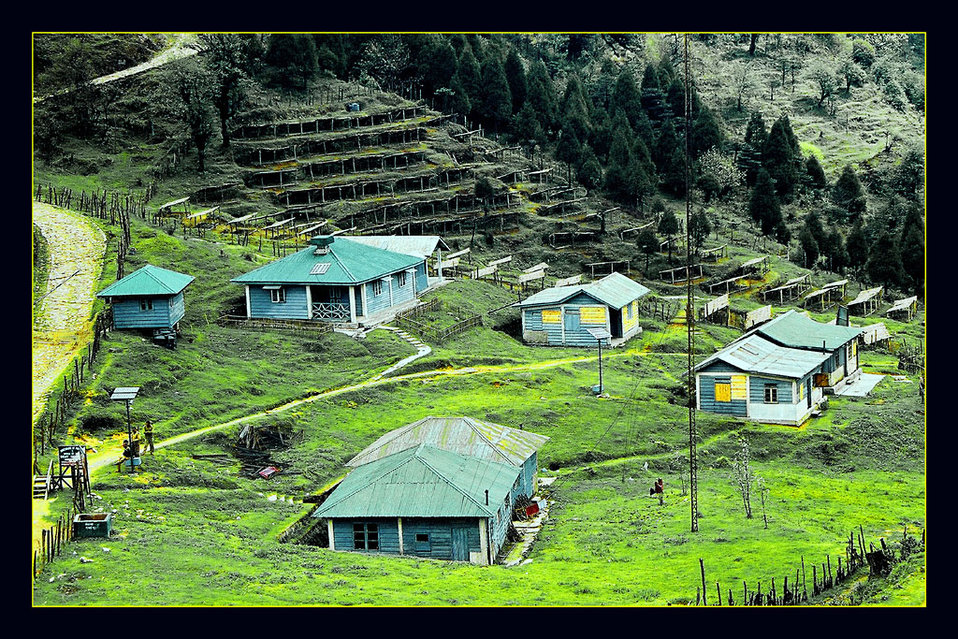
Uploaded by request of Deba Prasad Roy

Taken in Darjeeling District in the State of West Bengal, India

The name of the place is 'Gairibus' which falls en route Sandakphu, famous for viewing 'Kanchendzongha'. In Gairbus, people cultivating and protecting rare plants which are used mainly for medicines.